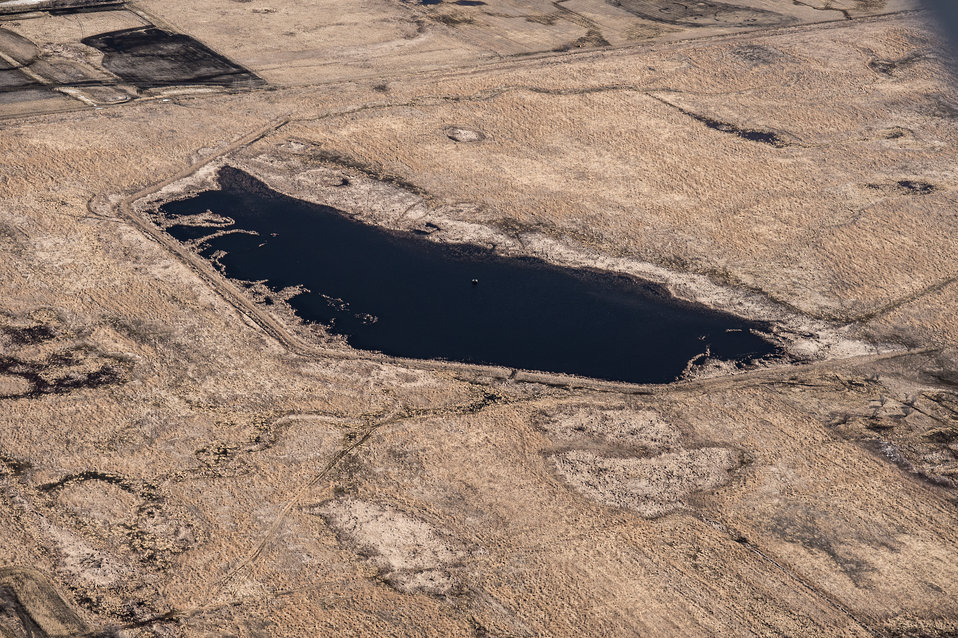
Ehlert North U.S. Department of Agriculture (USDA) Natural Resources Conservation Service (NRCS) Wetland Reserve Program (WRP) in Wilkin County, MN, on Tuesday, April 30, 2013. For information about this and other programs from the USDA Red River Basin Initiative (RRBI) please see www.mn.nrcs.usda.gov/news/features13/RRBI.html.